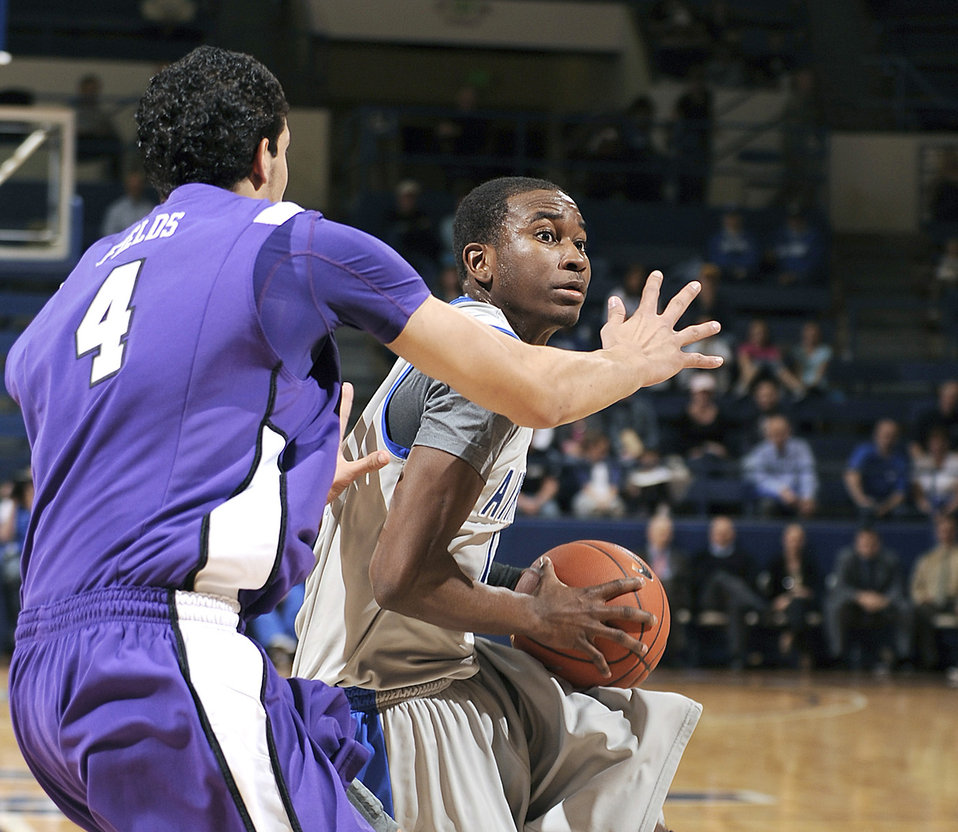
Falcons vs. Horned Frogs

The Air Force Academy's Mike Lyons looks to pass in front of Texas Christian University's Amric Fields during the Falcons' final home game of the season March 2, 2011, at the Academy's Clune Arena.